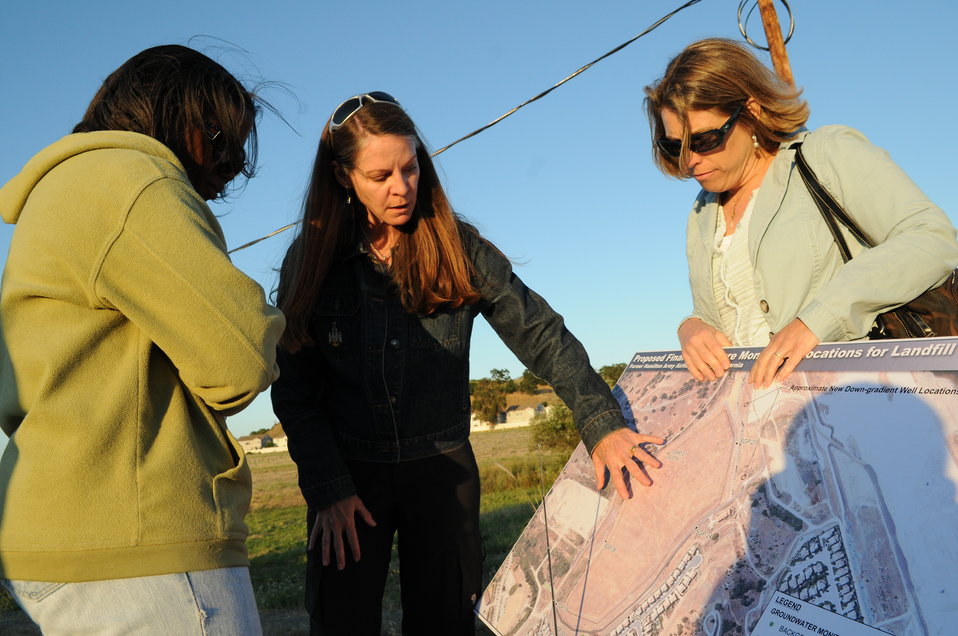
Corps conducts walkthrough of former military site

Karole Ward (center), a project manager with the U.S. Army Corps of Engineers Sacramento District, speaks with a local Novato, Calif., resident July 14, 2011. Ward and other Corps officials met with more than 30 people from the Hamilton Restoration Advisory Board (RAB) and the local public at the Hamilton Army Air Field during a site visit to the former military base to explain ongoing remediation efforts by the Corps. The site is under the Department of Defense’s Formerly Used Defense Sites (FUDS) program, which focuses on environmental cleanup of former military sites conducted by the Corps. Ward serves as the senior project manager for the project.